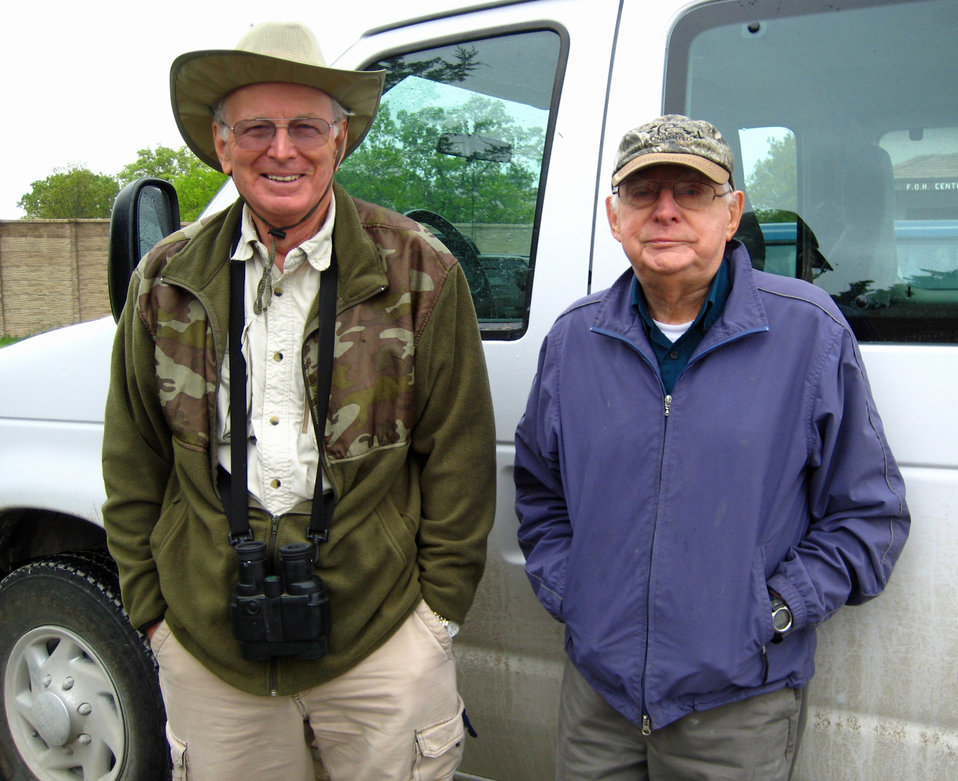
Jack Chiles & Karl Haller

Credit: Kathy Whaley/USFWS
April 2013